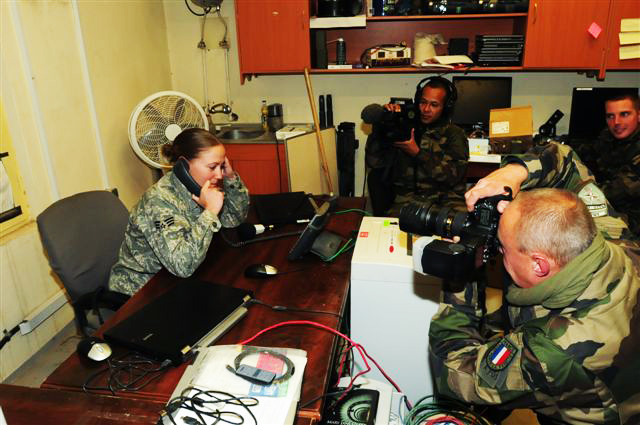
Senior Airman Ashley Jackson receives Thanksgiving greetings from President Barack Obama as French forces film the conversation Nov. 26, 2009, at Forward Operating Base Morales-Frazier, Afghanistan. Airman Jackson, a medic with Provincial Reconstruction Team Kapisa, is originally from Lakeville, Minn. She is deployed from Eielson Air Force Base, Alaska.